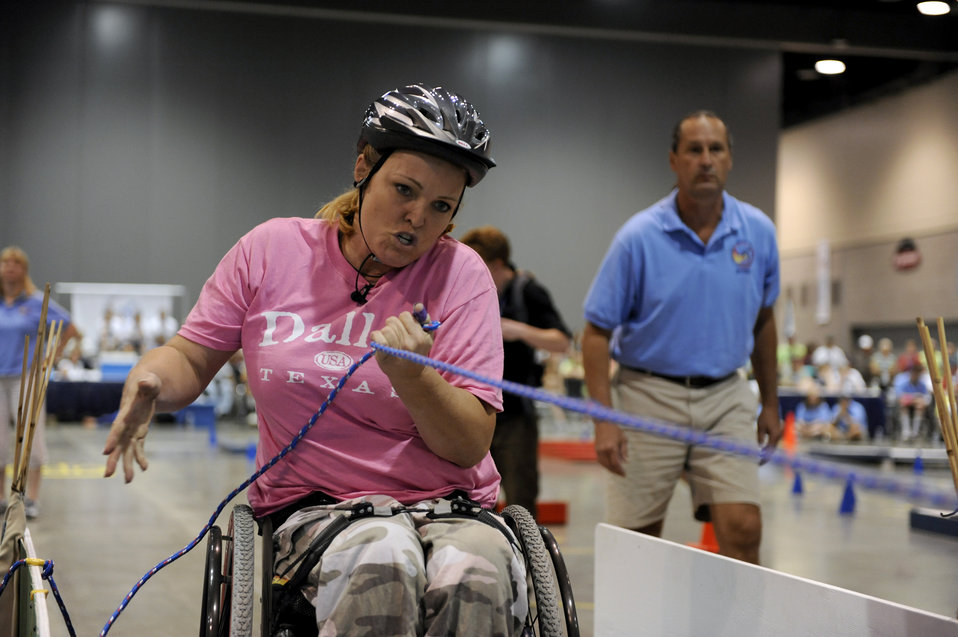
Volunteers ensure success at Veterans Wheelchair Games

Patricia LaBar pulls a rope as she competes in the slalom super G competition during the 29th National Veterans Wheelchair Games July 16 in Spokane, Wash. Ms. LaBar is an Army veteran and resides in Dallas.